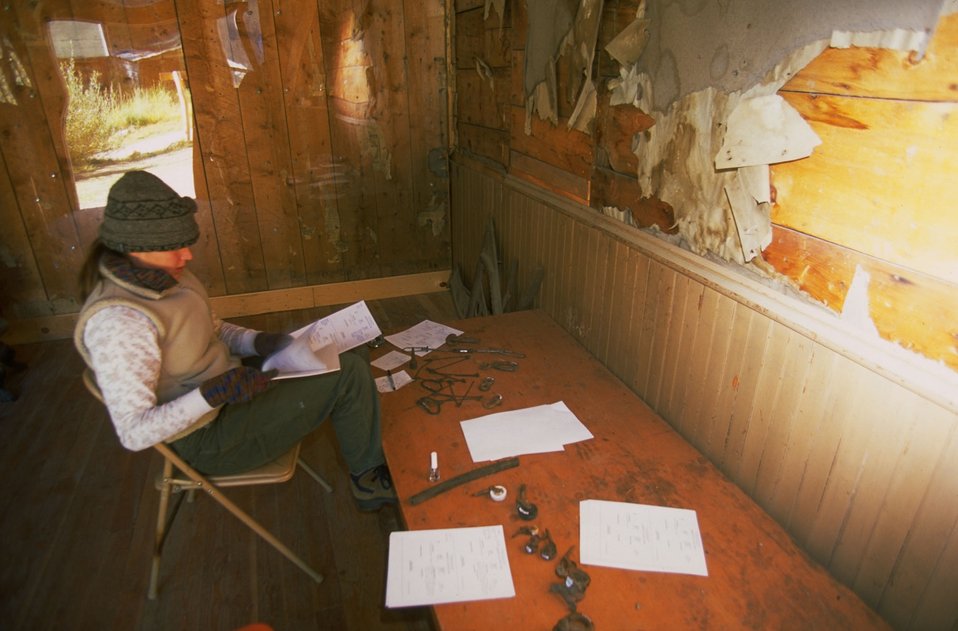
Historic artifacts inside Kelley's Saloon at Garnet Ghost Town